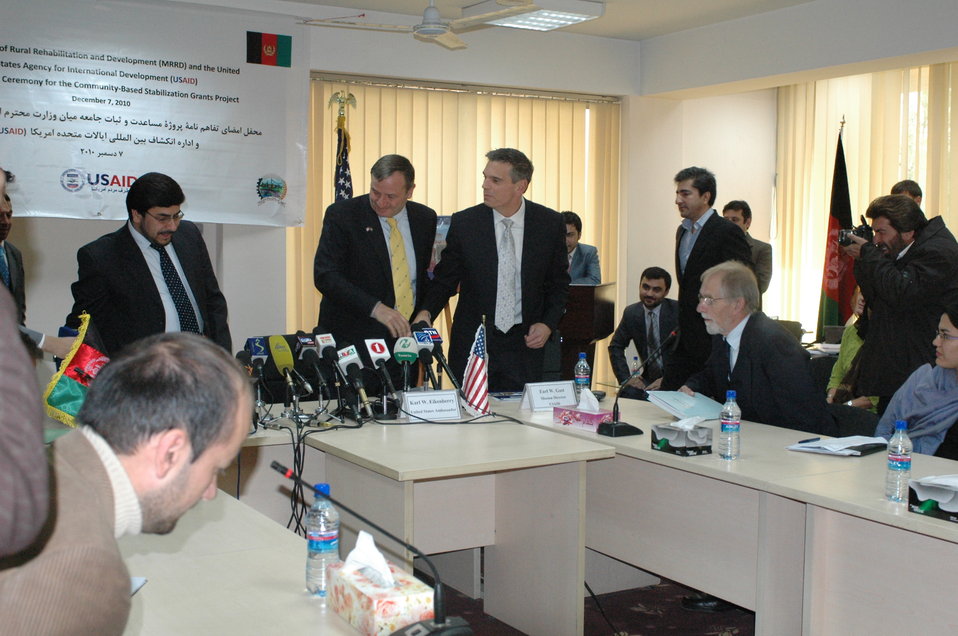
Community Based Stabilization Grants Ceremony, December 7, 2010